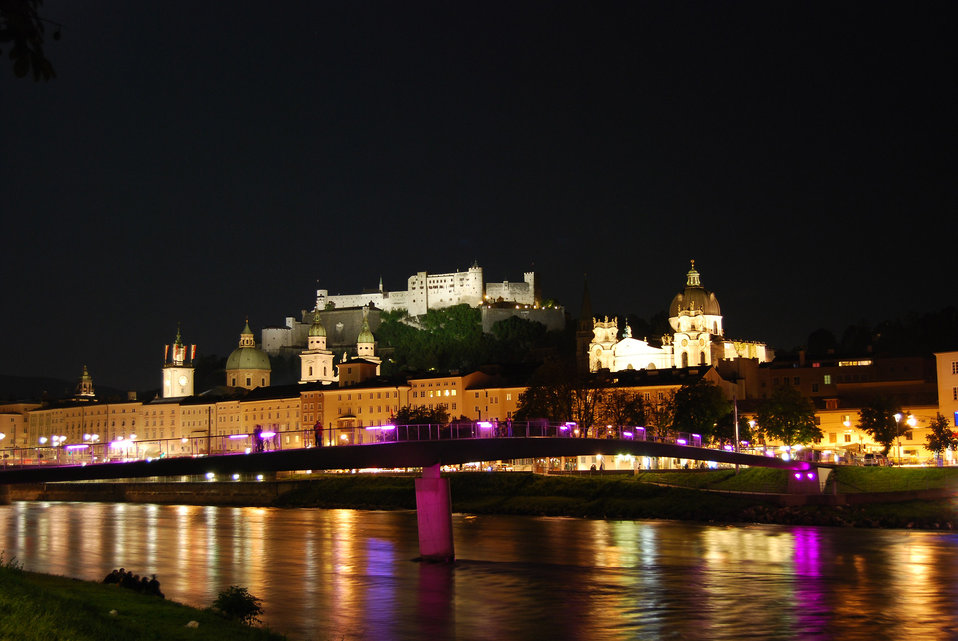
Night view of salzburg from the opposite riverside of salzach.